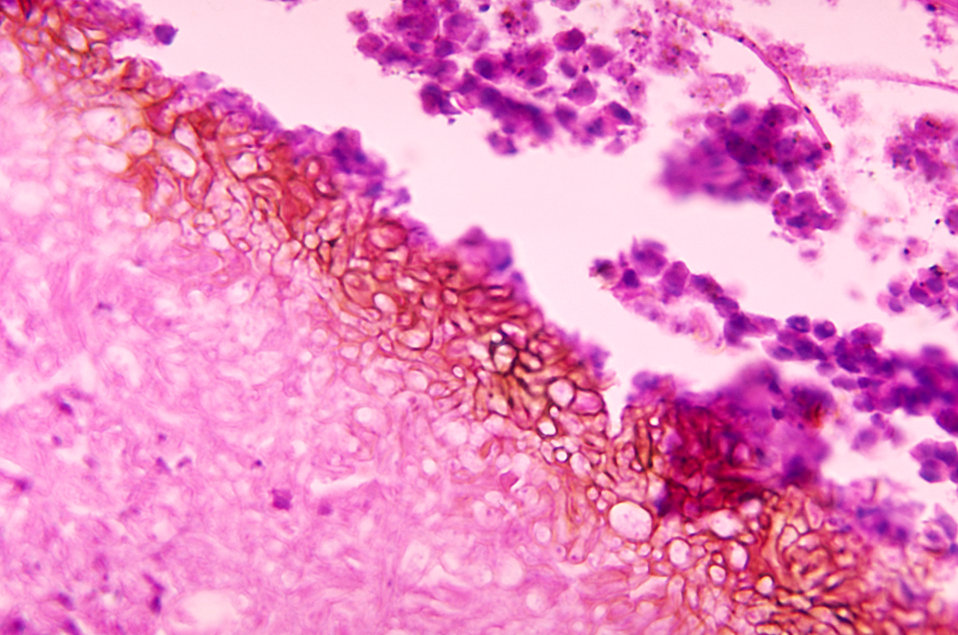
This slide depicts the histopathologic changes seen in 'black grain' mycetoma due to Madurella grisea.